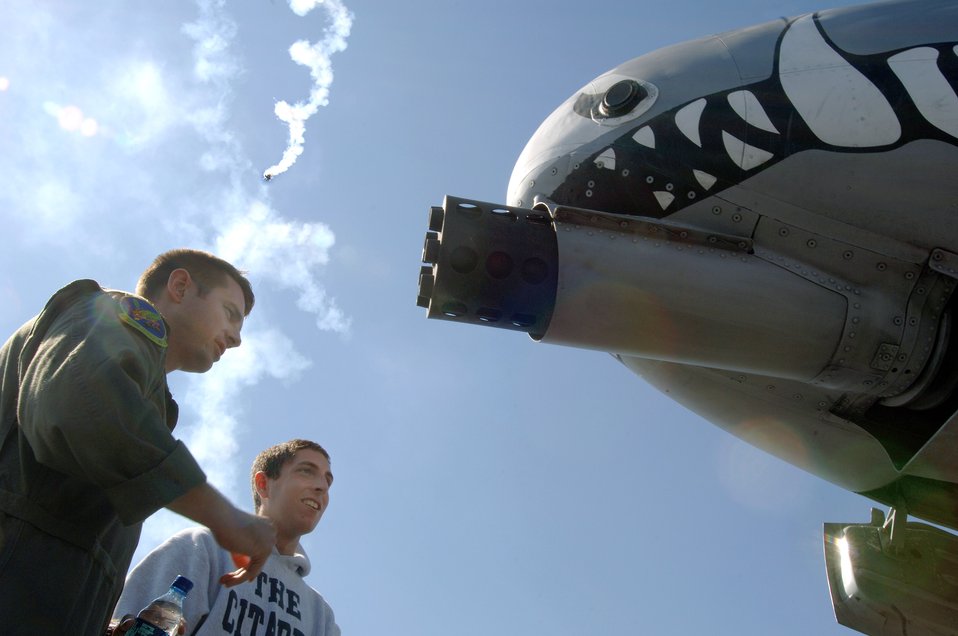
Air Force Week Atlanta wraps up

Maj. Jack Bissel talks with 18-year-old Alex Grayson of Peachtree City, Ga., about the A-10 Thunderbolt II during the Great Georgia Air Show Oct. 13 at Peachtree City, Ga. Mr. Grayson, a senior at McIntosh High School in Peachtree City, hopes to become an A-10 pilot after graduating from The Citadel. Major Bissel is an A-10 pilot with the 47th Fighter Squadron from Barksdale Air Force Base, La. Atlanta is one of six cities throughout the country chosen to host an Air Force Week. The theme for the year is